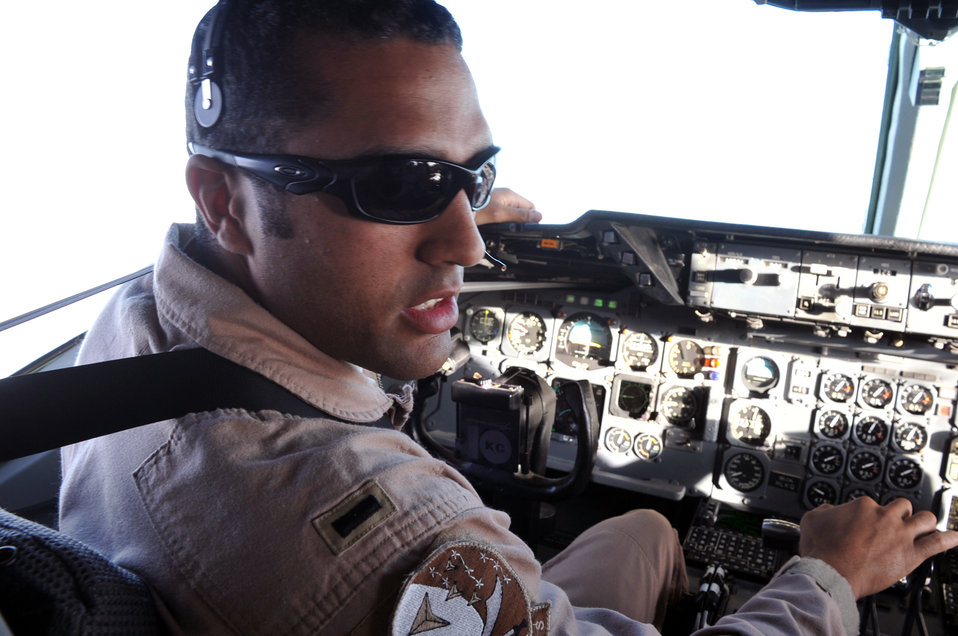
KC-10 pilot

1st Lt. Jason Brown flies a KC-10 Extender on an air refueling mission April 24, 2010, in Southwest Asia. KC-10 Extender tanker pilot with the 908th Expeditionary Air Refueling Squadron, Lieutenant Brown is a KC-10 pilot deployed from the 305th Air Mobility Wing, Joint Base McGuire-Dix-Lakehurst, N.J., and his hometown is Arvada, Colo.